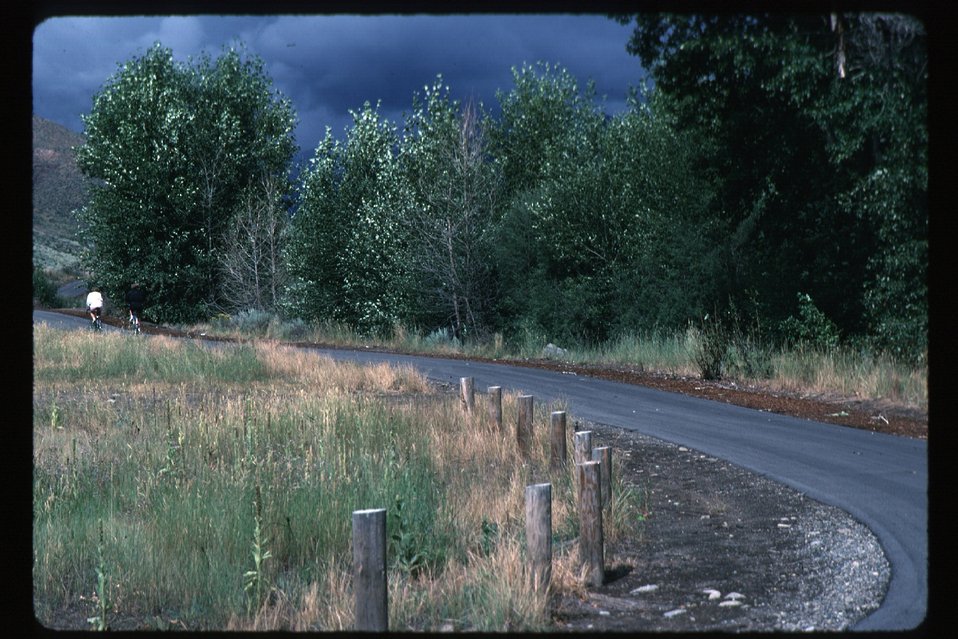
Recreation Scenic Biker Shoshone Field Office USRD Upper Snake River District